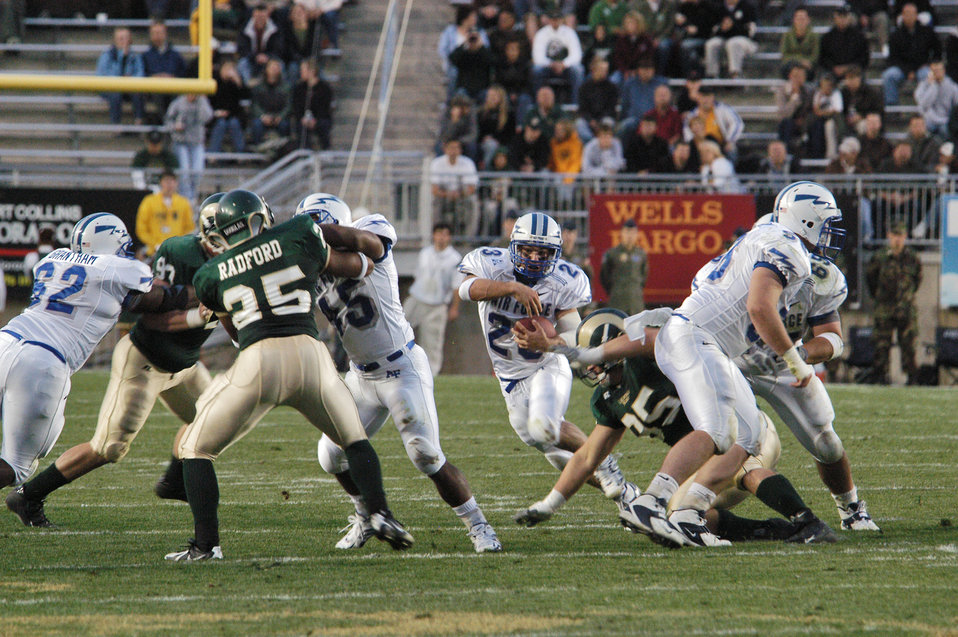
Colorado State rams Falcons, 41-23

FORT COLLINS, Colo. -- Air Force halfback Chad Hall, 23, looks for running room as fullback Ryan Williams, 45, and company clear the way through the Colorado State University defense.